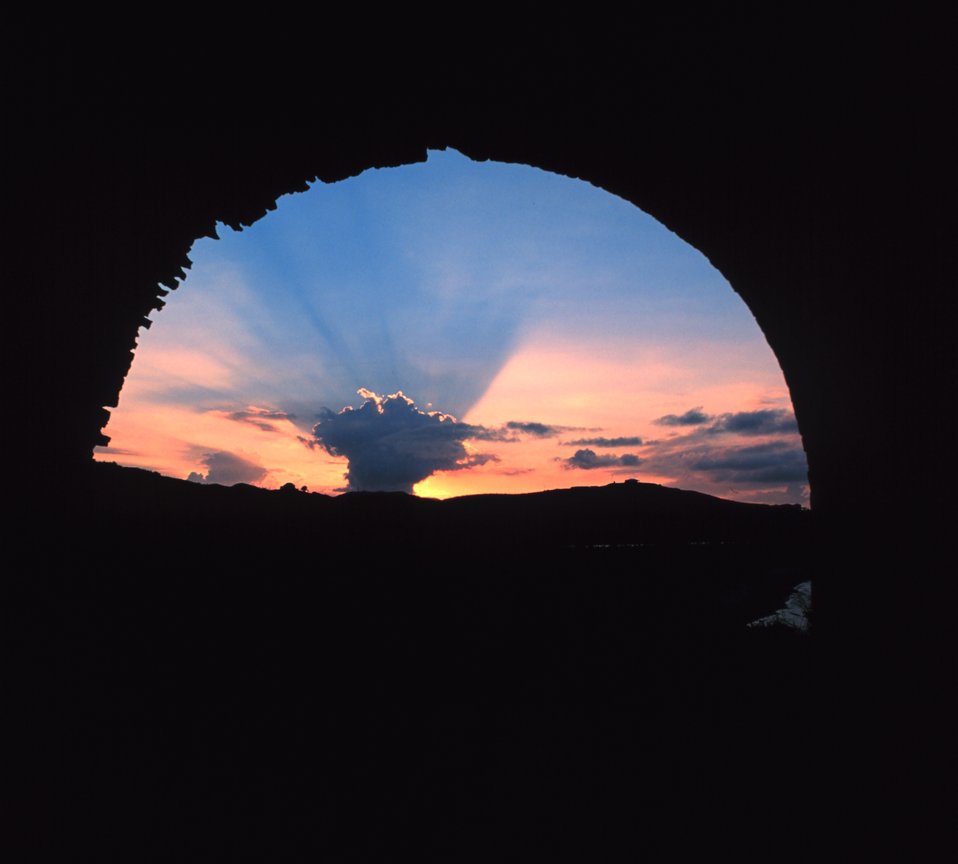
A Danish windwill ruin at sunset on the northeast end of St. Croix. Buck Island Reef National Monument is in the background.